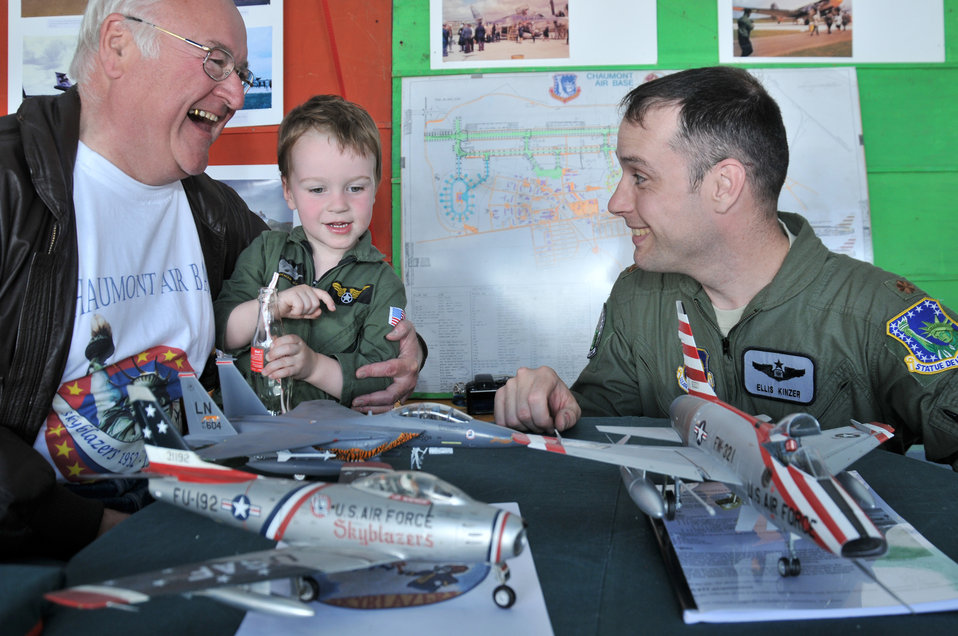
The French Connection

Maj. Ellis Kinzer and his son William admire model aircraft built by Jerome Wilhelem (left) June 12, 2011, at an exhibition celebrating the former Chaumont Air Base, in Villiers-Le-Sac, France. Major Kinzer is the 494th Fighter Squadron assistant director of operations, and he represented the 48th Fighter Wing at the event, which the 48th FW operated from 1952 to 1967. The two models in the foreground are models of aircraft which were once based at Chaumont AB.